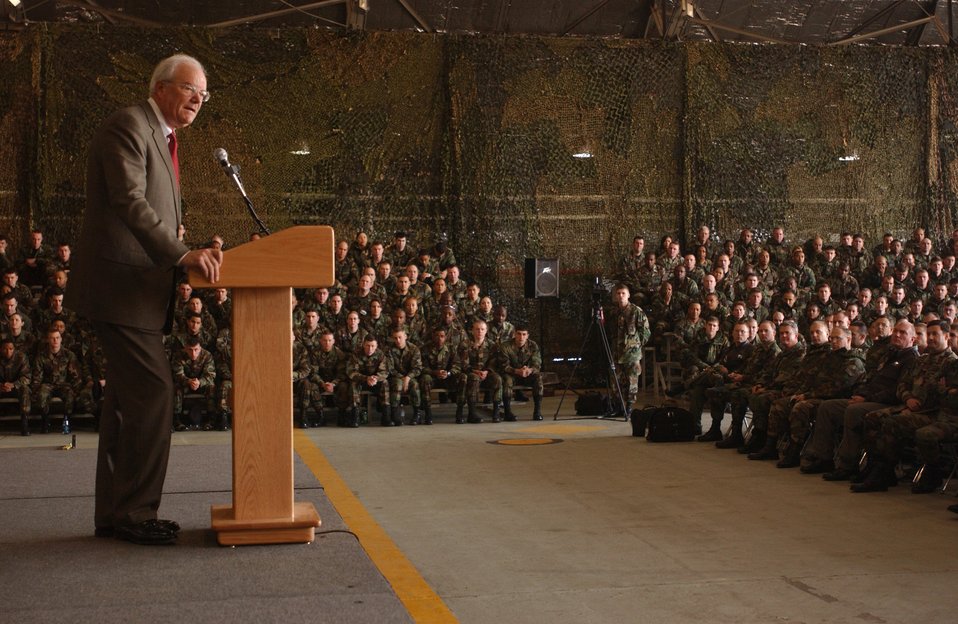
Secretary of the Air Force visits Korea

Secretary of the Air Force Michael W. Wynne speaks to Airmen Tuesday, March 21, 2006, during his visit to Osan Air Base, South Korea.